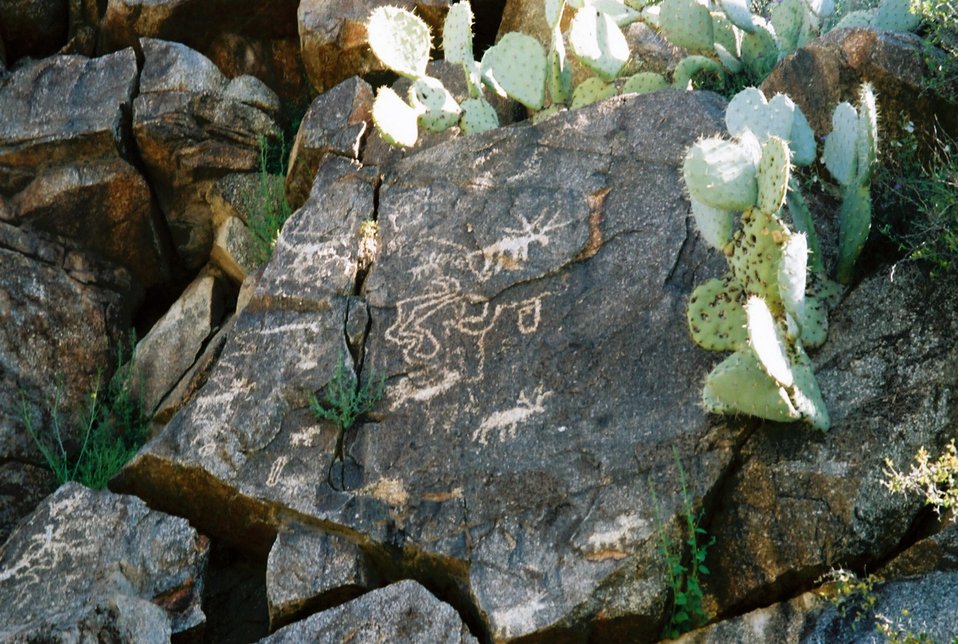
Petroglyphs (Rock Art) are present throughout the Agua Fria National Monument.